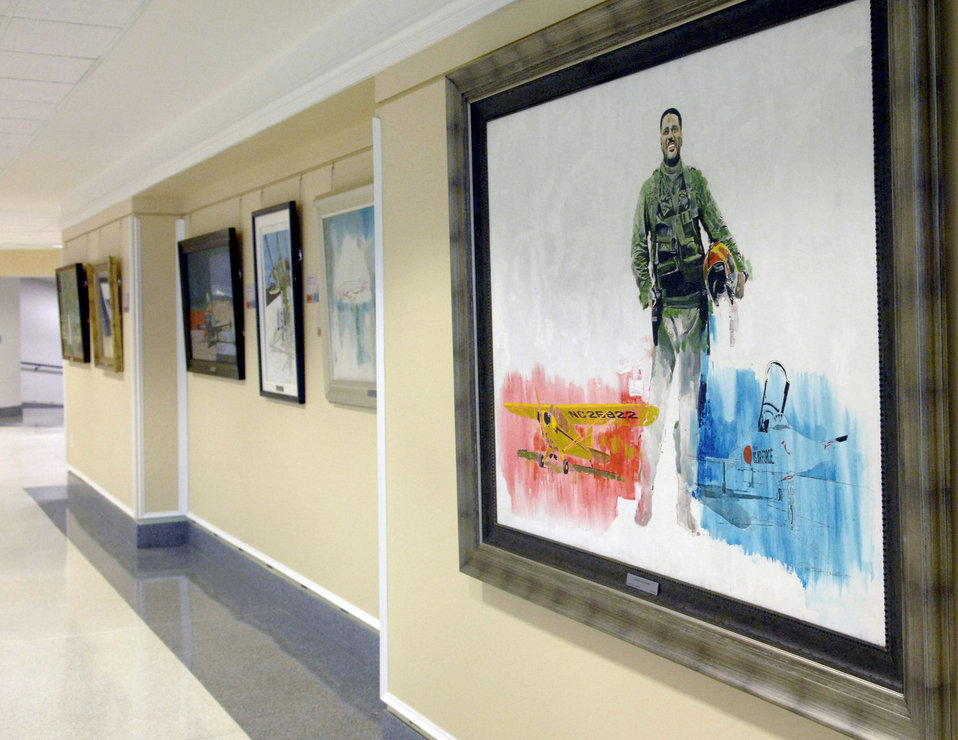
Roy LaGrone art

Examples of the artwork unveiled at the Roy LaGrone art exhibit at the AF Art Gallery Feb 15, 2011, in the Pentagon. Mr. LaGrone was a Tuskegee Airman before pursuing a career in art.